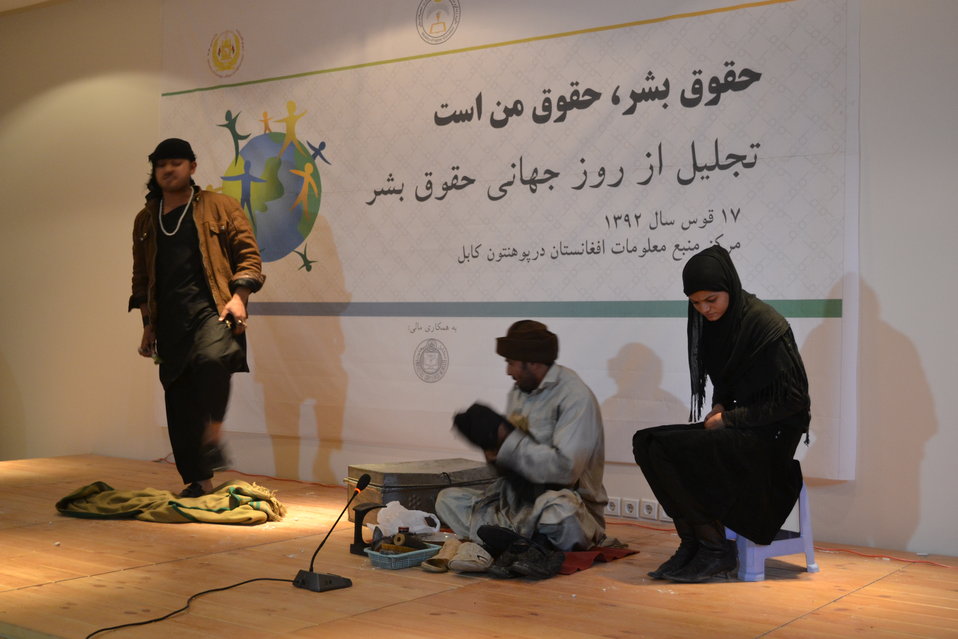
Human Rights Day at the Afghan Center, Kabul University